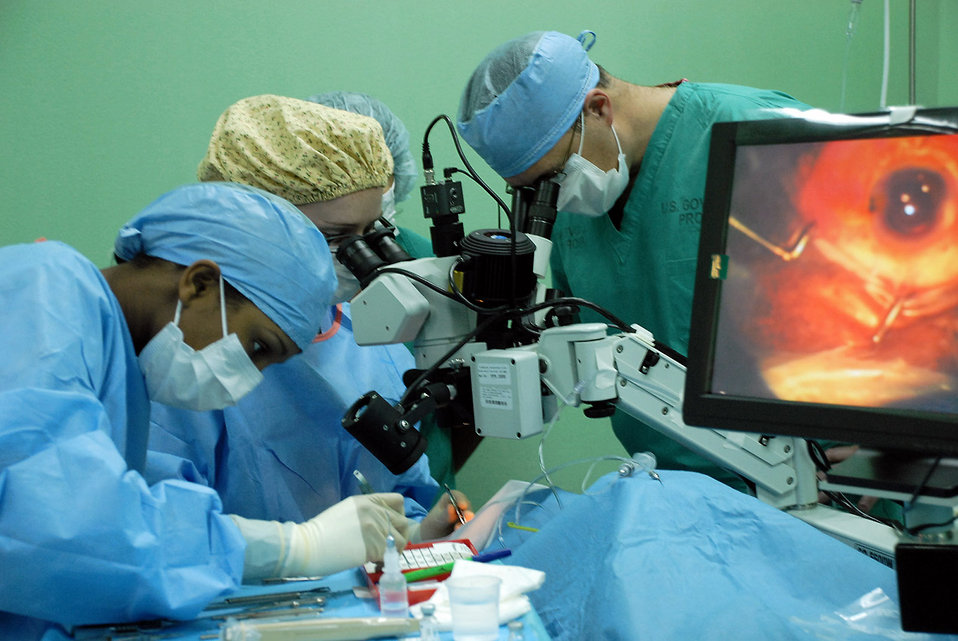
Hondurans benefit from medical team

Senior Airman Shirley Taylor (left) passes instruments Feb. 26 as Capt. (Dr.) Megan McChesney and Lt. Col. (Dr.) Dave Zumbro remove a cataract from an elderly patient's eye in Tela, Honduras. A 12-person joint eye surgery team conducted about 70 surgeries as part of a U.S. Southern Command-sponsored MEDRETE.